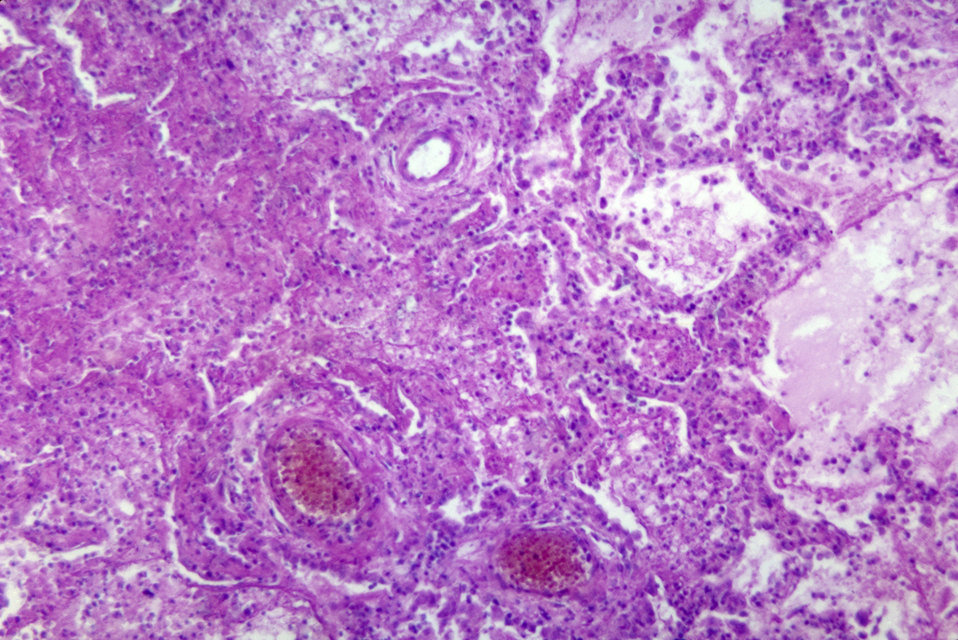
Histopathology of toxoplasmosis of lung